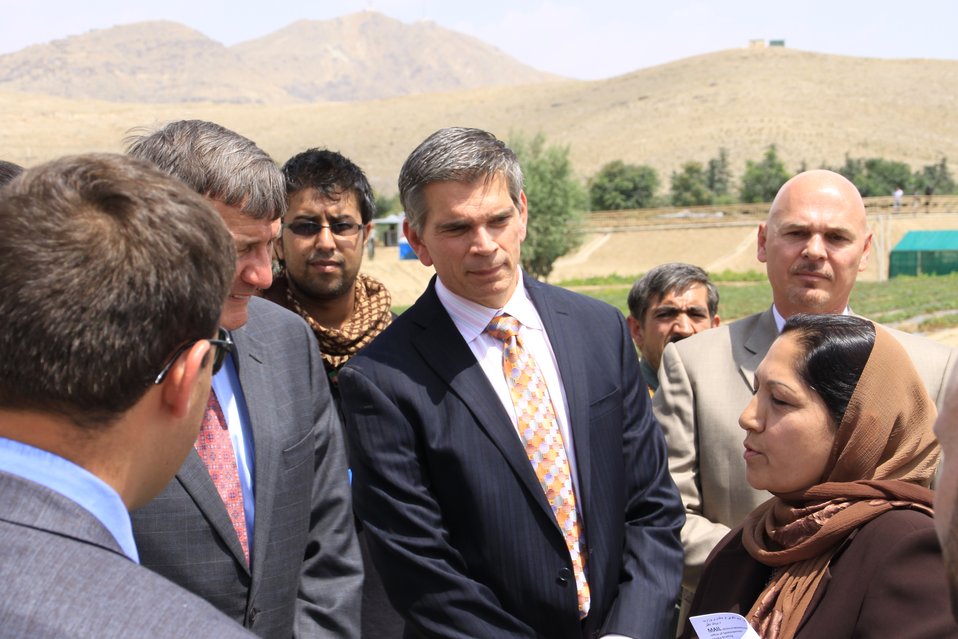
Badam Bagh Farm